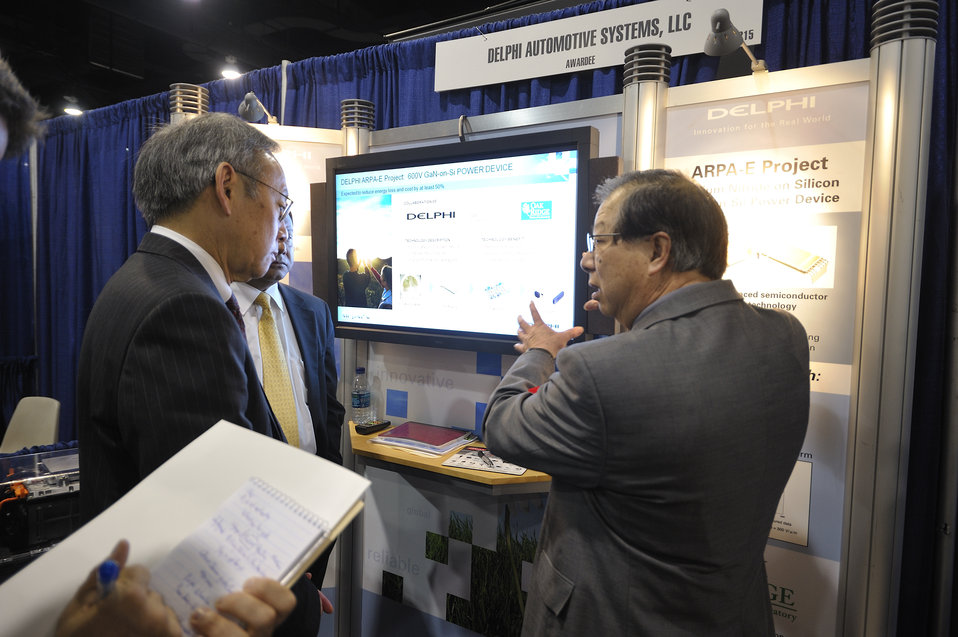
ARPA-E Energy Innovation Summit 2011, 58 of 83

ARPA-E Energy Innovation Summit 2011